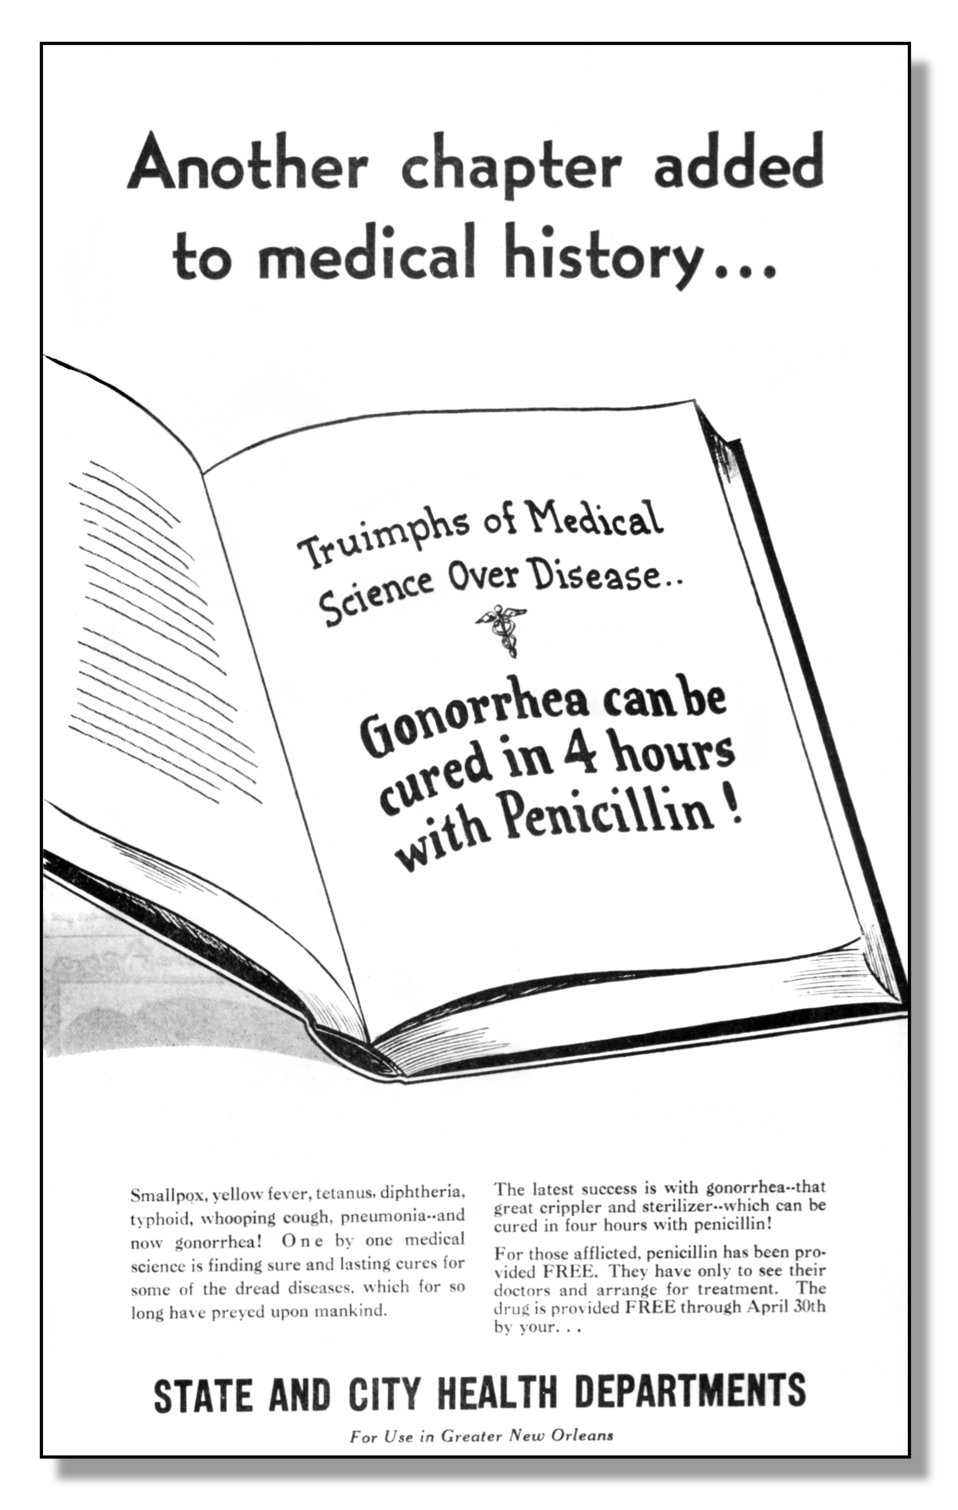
This was an early poster promoting penicillin as a treatment for gonorrhea.